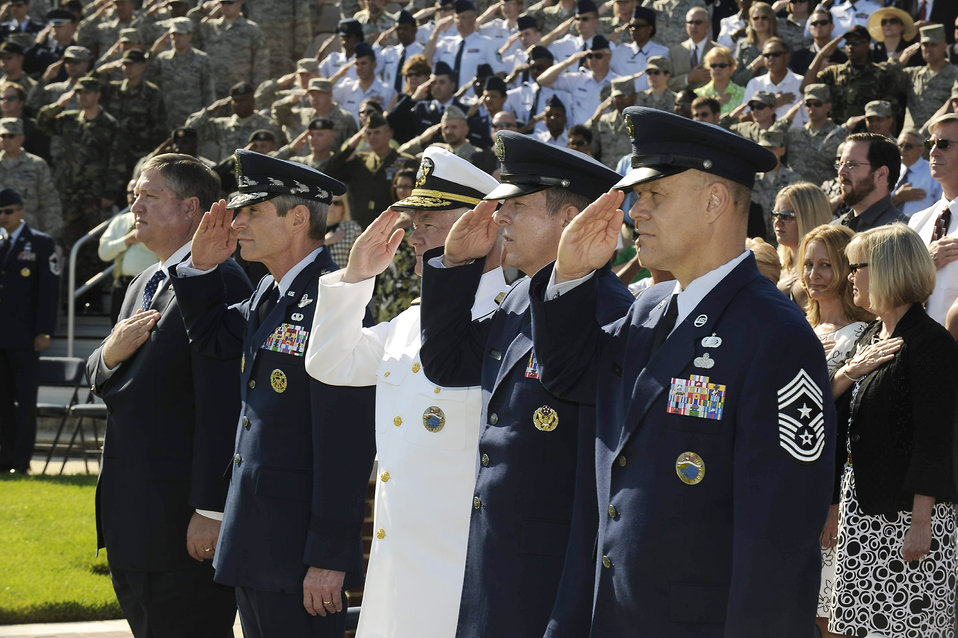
Air Force bids farewell to Chief McKinley, hails Chief Roy

Military leaders salute the flag during the national anthem at the retirement ceremony for Chief Master Sgt. of the Air Force Rodney J. McKinley June 30 at Bolling Air Force Base, D.C. Chief McKinley retired and Chief Master Sgt. of the Air Force James A. Roy was appointed as the Air Force's 16th top enlisted leader.